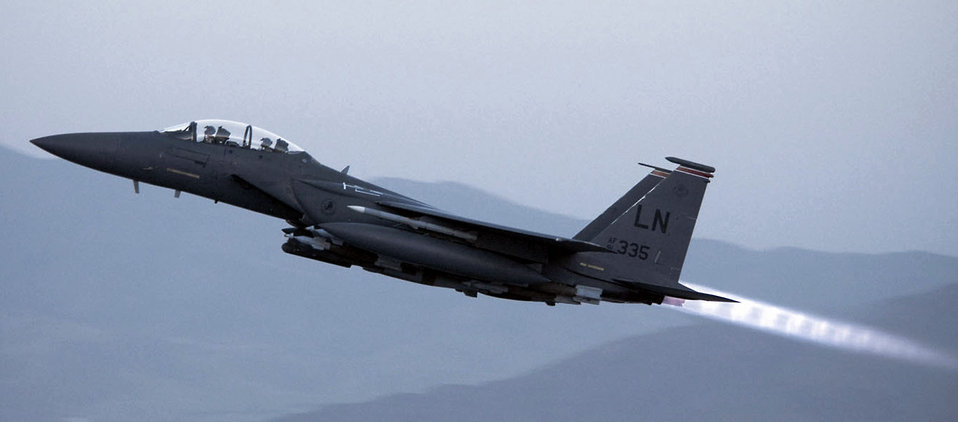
July 21 airpower summary: F-15Es deter anti-Afghan activities

An F-15E Strike Eagle takes off at Bagram Air Field, Afghanistan. The F-15E Strike Eagle is a dual-role fighter designed to perform air-to-air and air-to-ground missions.